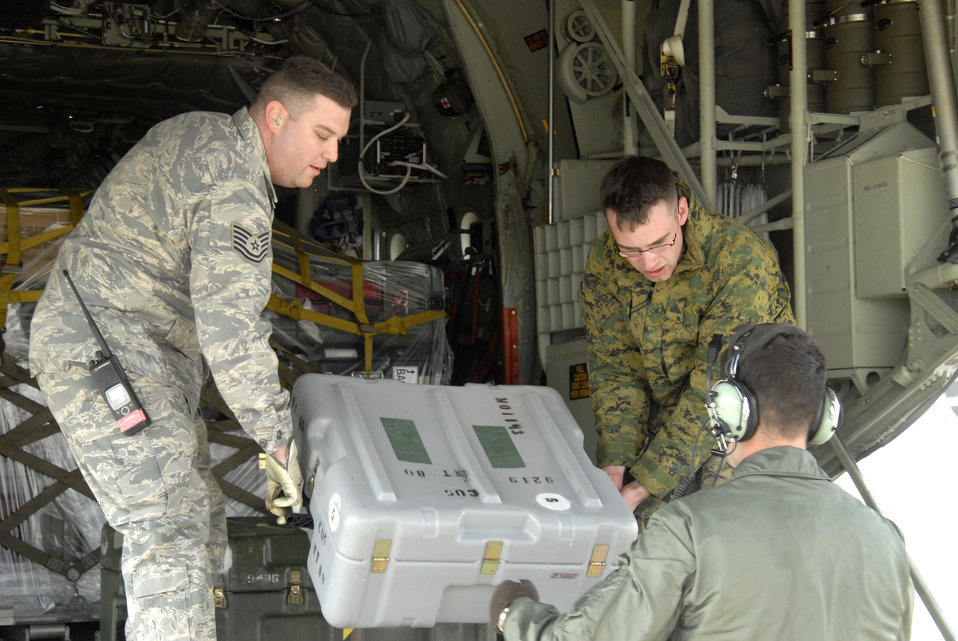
Marines arrive in Kunsan for exercise

Technical Sgt. Anthony Luddon and Marine Lance Cpl. Brendon Shaugnessy offload cargo from a Marine Corps KC-130J Super Hercules from Marine Air Station Futenma from Japan Feb. 23 at Kunsan Air Base, South Korea. The Marines will support Exercise Key Resolve, giving Kunsan AB Airmen a chance to practice accepting follow-on forces during the 8th Fighter Wing's oerational readiness exercise. Sergeant Luddon is assigned to the 8th Logistics Readiness Squadron, and Corporal Shaugnessy is assigned to the Combat Logistics Regiment 37.